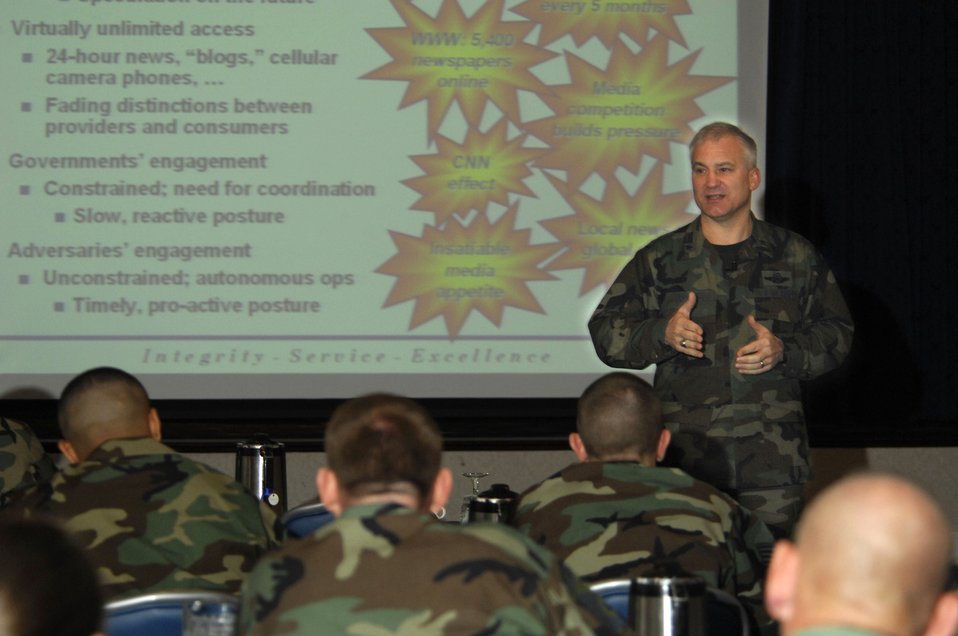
Airmen learn new perspectives in leadership

Brigadier Gen. Erwin F. Lessel III spoke to 50 NCOs at the NCO Forum March 13 at Bolling Air Force Base, Washington D.C. He discussed policy changes, recapitalization, the